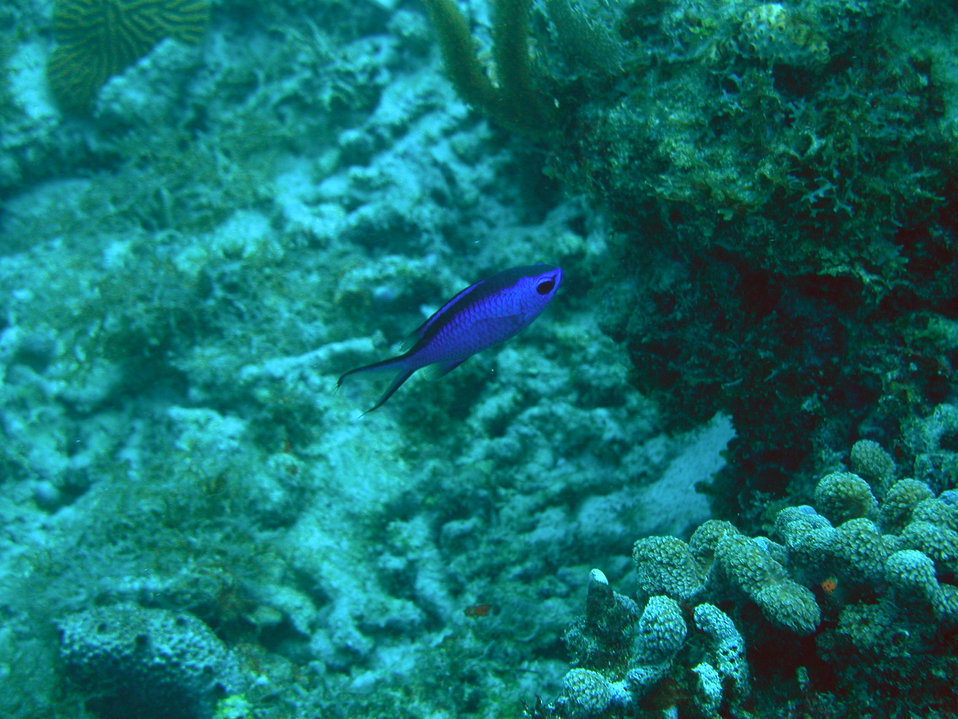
Blue chromis (Chromis cyanea)